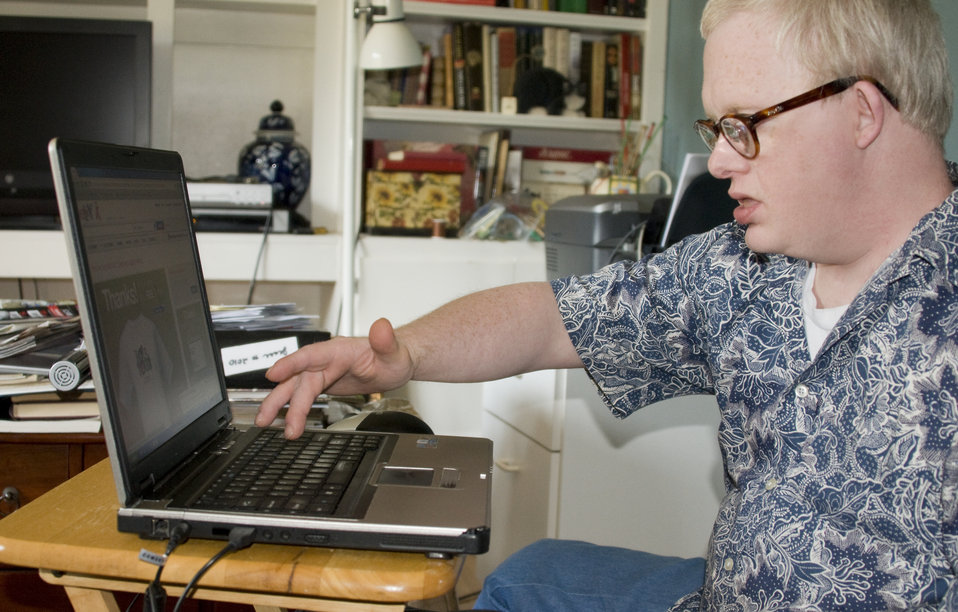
The man pictured here was shown using a laptop computer. Though intellectually-challenged, he is still able to navigate his way through the Internet, and effectively use this computer, and its keyboard controls.